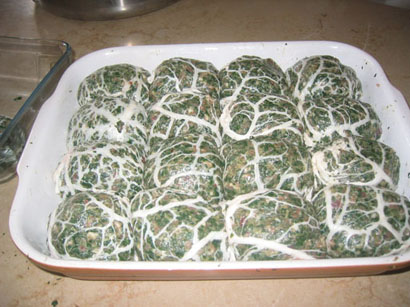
Fran√ßais†: Septembre 2006